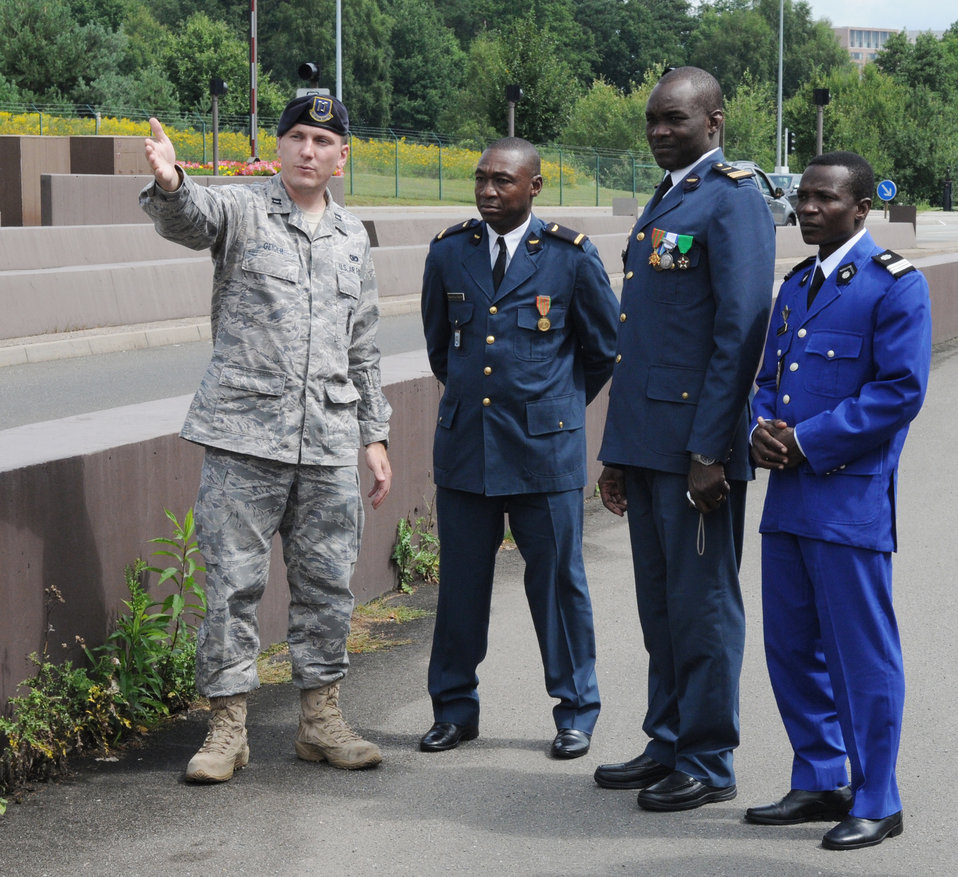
17th Air Force officials host military exchange from Africa

Capt. David Geiger (far left) outlines base entrance security procedures for a delegation of officers from Burkina Faso Aug. 10 at Ramstein Air Base, Germany. The Burkina Faso military members are Lt. Dabir Dapr Paul, Maj. Souleymane Ouedraogo and Capt. Hubert Yameoga.